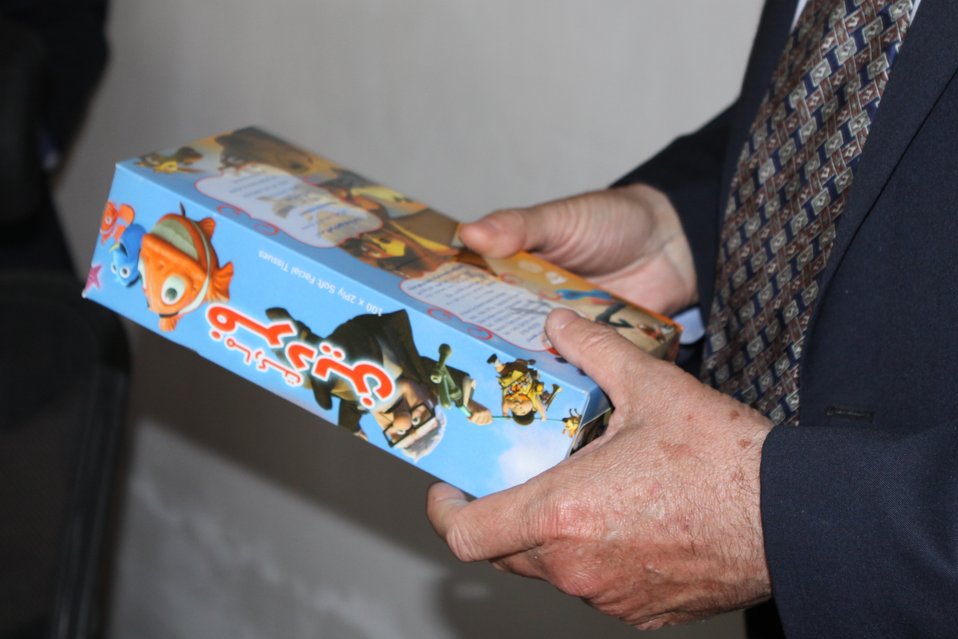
100525 Hirat Marble Conference 846